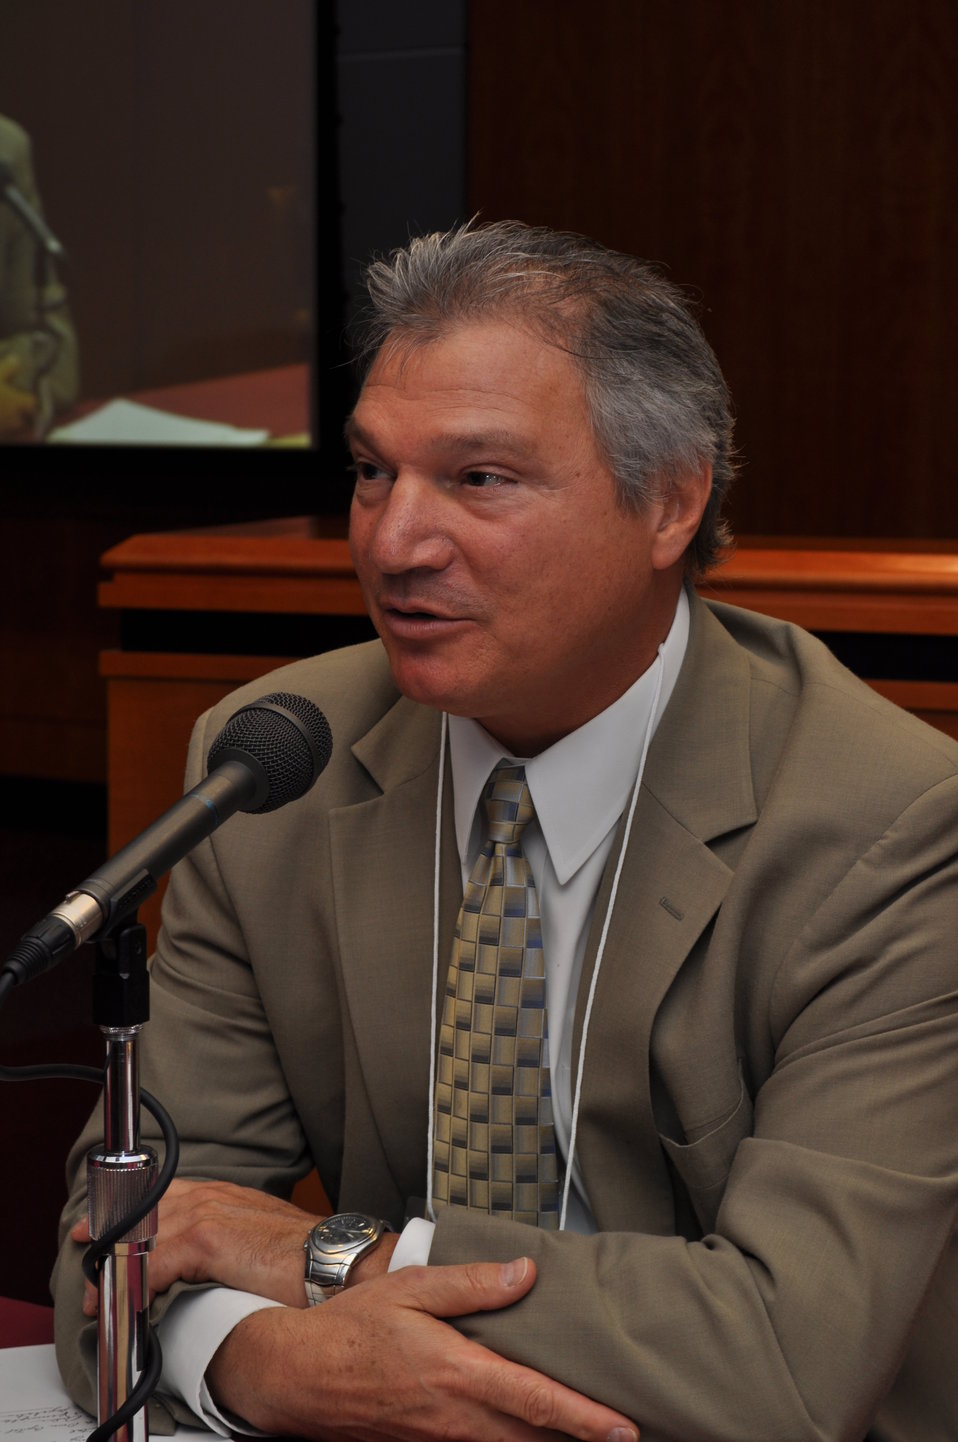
Capitalization Strategies

Workshop for small, minority and women owned businesses. Hosted by the Office of Communications Business Opportunities